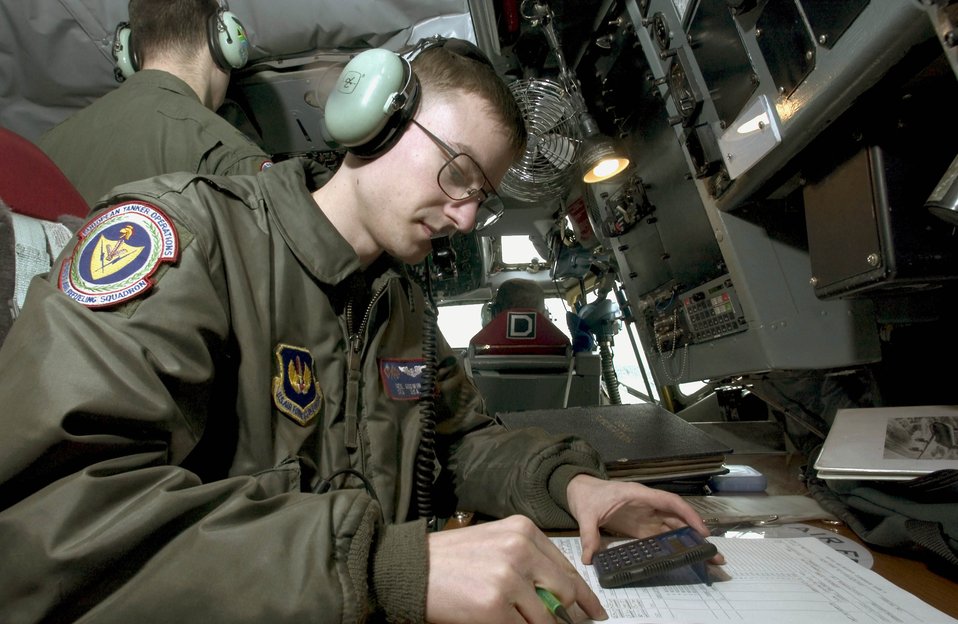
Flying out of Fairford

ROYAL AIR FORCE FAIRFORD, England -- Senior Airman Neil Godwin computes the weight and balance of a KC-135 Stratotanker from the 351st Expeditionary Air Refueling Squadron at Royal Air Force Mildenhall. The 351st EARS will fly out of the airstrip here while Mildenhall's runway is under construction. Airman Godwin is a boom operator with the 351st EARS.